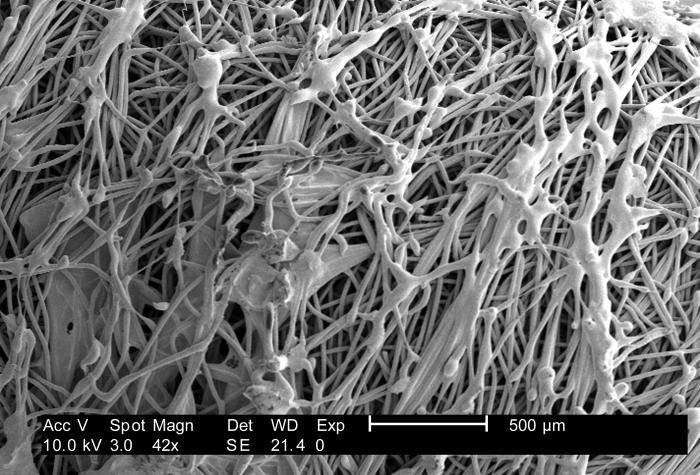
Under a low magnification of 42x, this 2007 scanning electron micrograph (SEM) depicted the fibrous configuration of a plain uninoculated polyester swab. This swab, as well as three other materials, including macrofoam (see PHIL 9736, 9737, 9738), rayon (see PHIL 9734), and cotton (see PHIL 9732, 9733) were scanned for a CDC study involving their efficiency in recovery of Bacillus anthracis bacterial spores from steel coupons that had been inoculated with a spore suspension of known concentration. The article discussing the description of this swab material analysis, and the analytical results was published in 'Emerging Infectious Diseases', Vol. 10, No. 6, June, 2004, and was entitled, Swab Materials and Bacillus anthracis Spore Recovery from Nonporous Surfaces. A link to this article is found below.